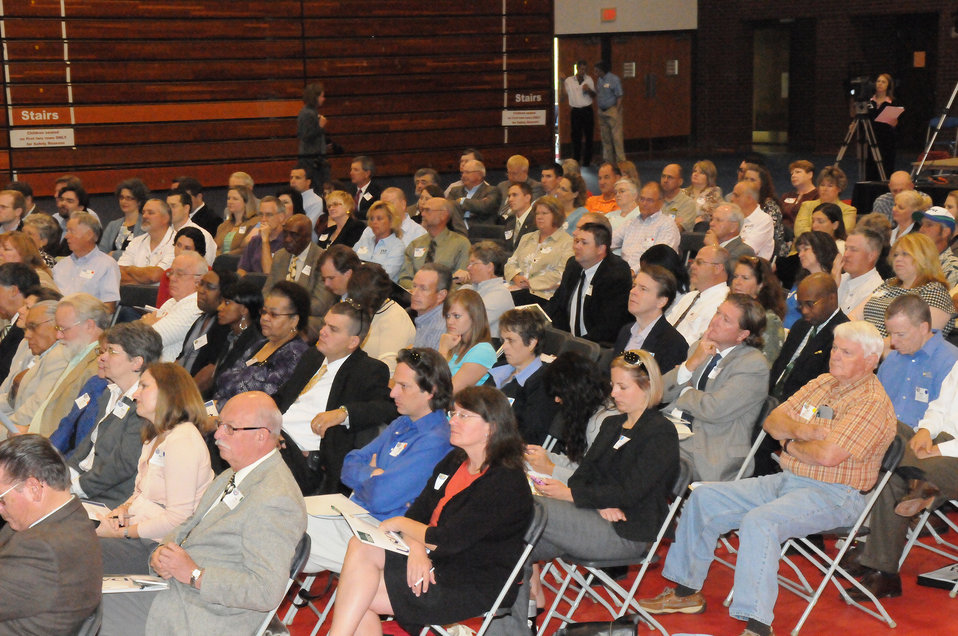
Members of the audience listen to speakers at the USDA Rural Summit held at Jefferson College in Hillsboro, MO., on Thursday, June 3, 2010. USDA Photo 10di1386-46.